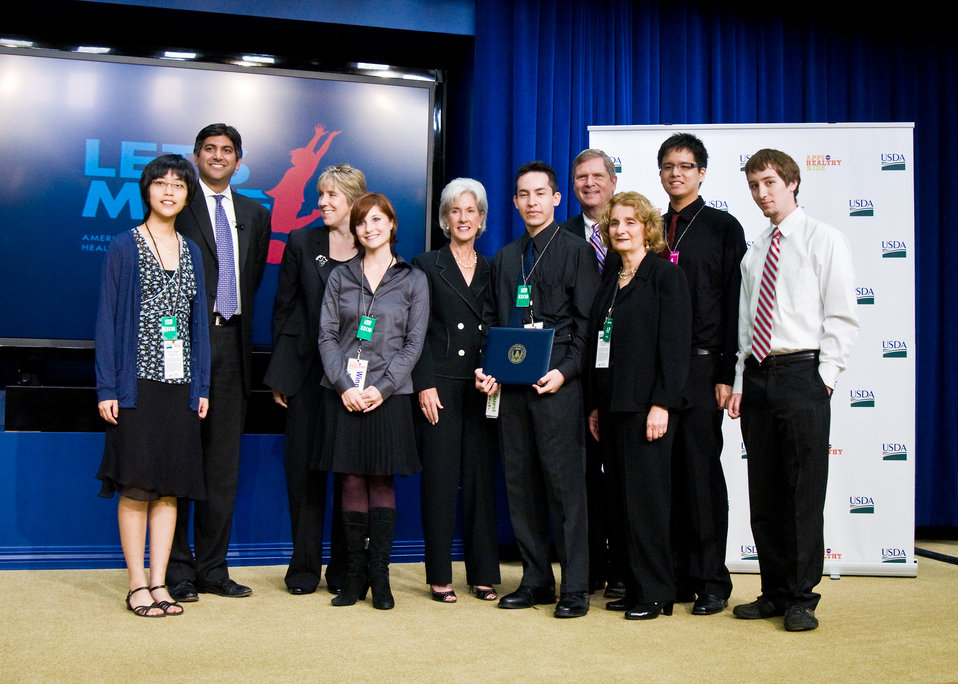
Aneesh Chopra, White House Chief Technology Officer, Julie Goon, General Electric, Health and Human Services Secretary Kathleen Sebelius and Agriculture Secretary Tom Vilsack present First Prize to David Villatoro, North Hills, California and a team of developers from the University of Southern California of the game 'Trainer,' of The Apps for Healthy Kids competition at the White House, in Washington, DC, on Wednesday, September 29, 2010. This team also won the GE Healthymagination Student Awards. The Apps for Healthy Kids competition is part of First Lady Michelle Obama’s Let’s Move campaign to end childhood obesity within a generation. The competition challenges software developers, game designers, students and other innovators to develop fun and engaging software tools and games to urge children, especially “tweens” (children ages 9-12) – directly or through their parents – to eat better and be more physically active. Trainer gives players the responsibility of caring for creatures who all have dietary and fitness needs. Unlike any other title currently on the market, the player actually trains with creatures. When one of the creature exercises, so does the Player! Both benefit from this shared activity. USDA Photo 10di1506-133 by Bob Nichols.